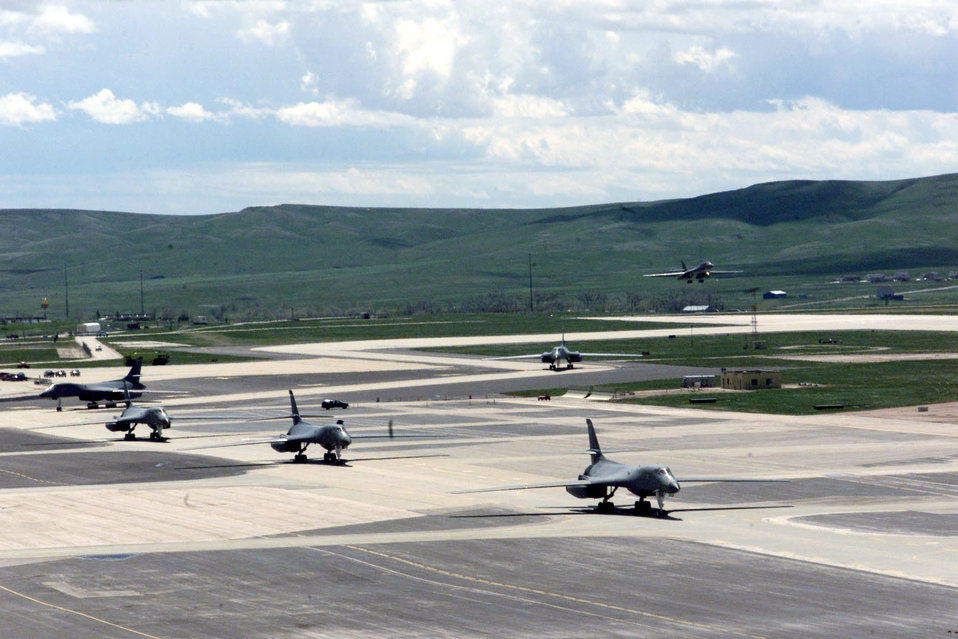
Home again

ELLSWORTH AIR FORCE BASE, S.D. -- Six B-1 Lancers and their crews return to a crowd of family and friends welcoming them home here May 13. As of May 8, B-1s flew 497 combat sorties supporting operations Enduring Freedom and Iraqi Freedom and dropped 4.56 million pounds of munitions.